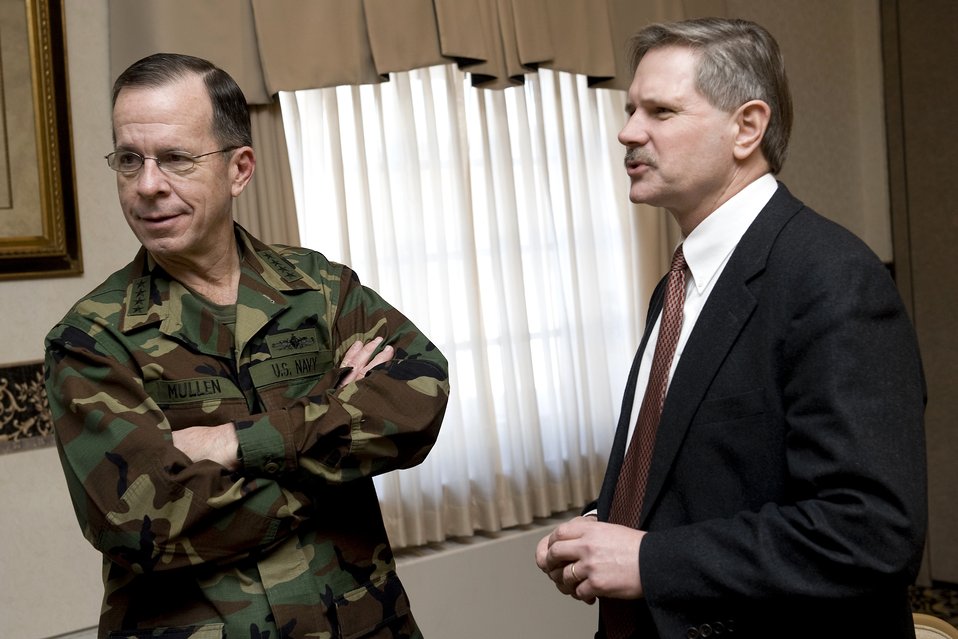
JCS chairman visits Minot

Adm. Michael G. Mullen, chairman of the Joint Chiefs of Staff, chats with North Dakota Governor John Hoeven Feb. 18 during a visit to Minot Air Force Base, N.D.